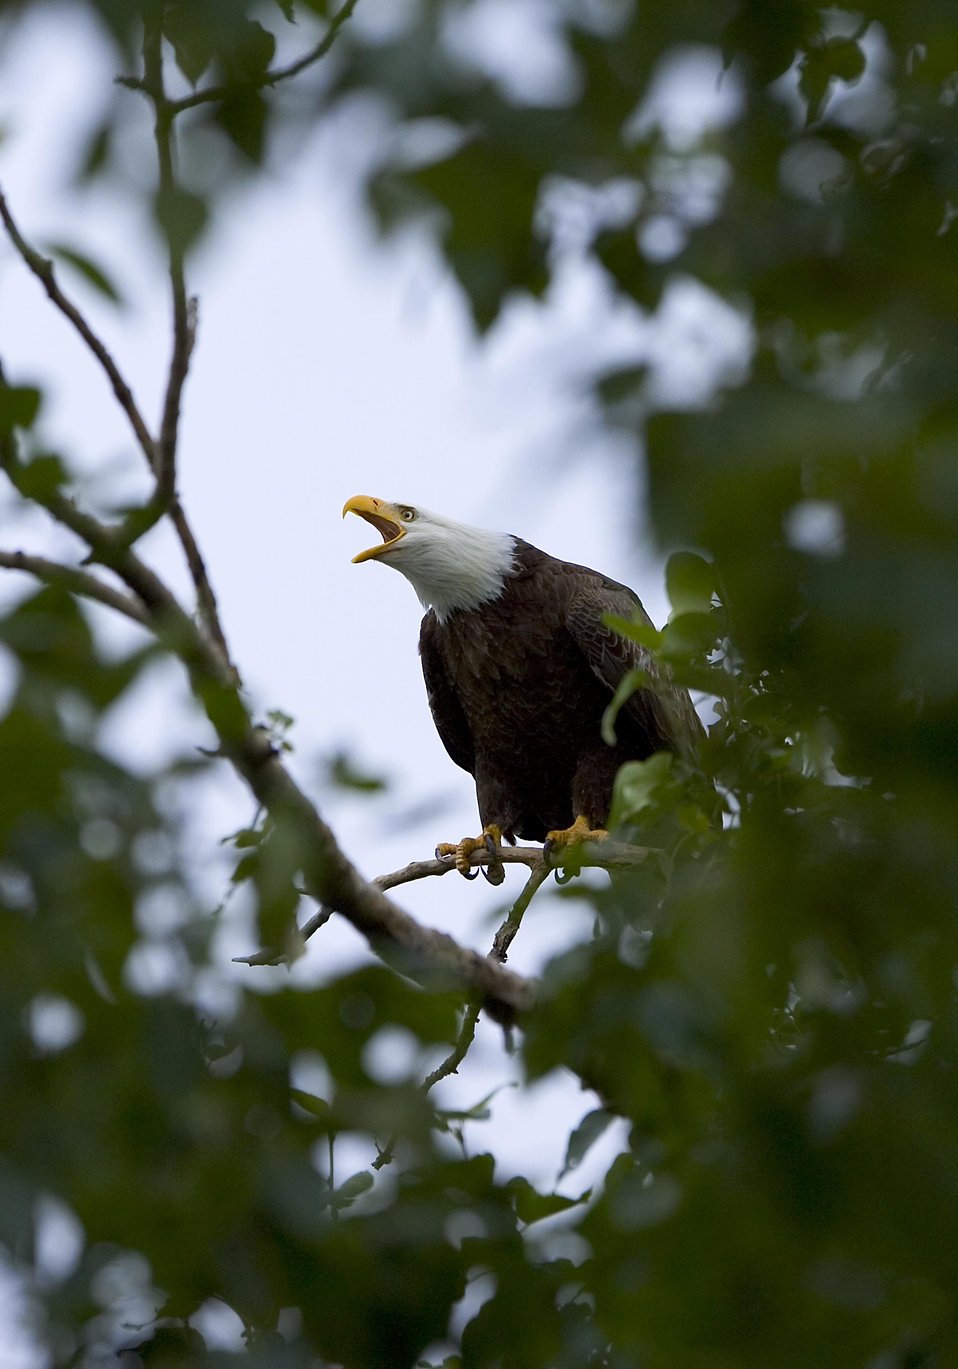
Wildlife of Kodiak Refuge

Bald Eagle